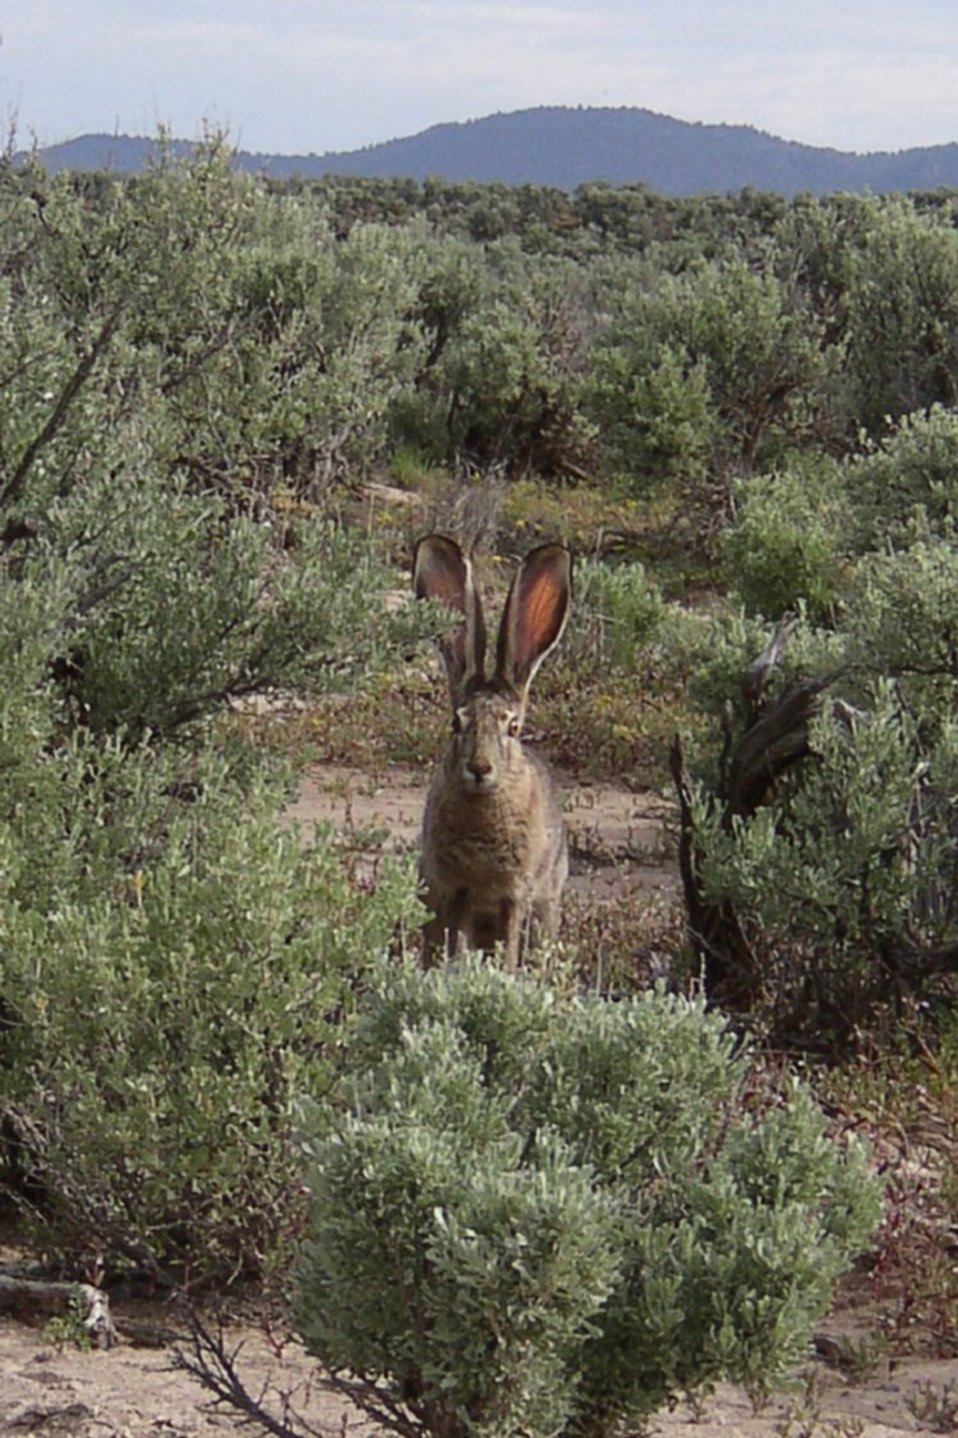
Jack rabbit near Canary Lake. Kate Peterson, Prineville Wildlife3